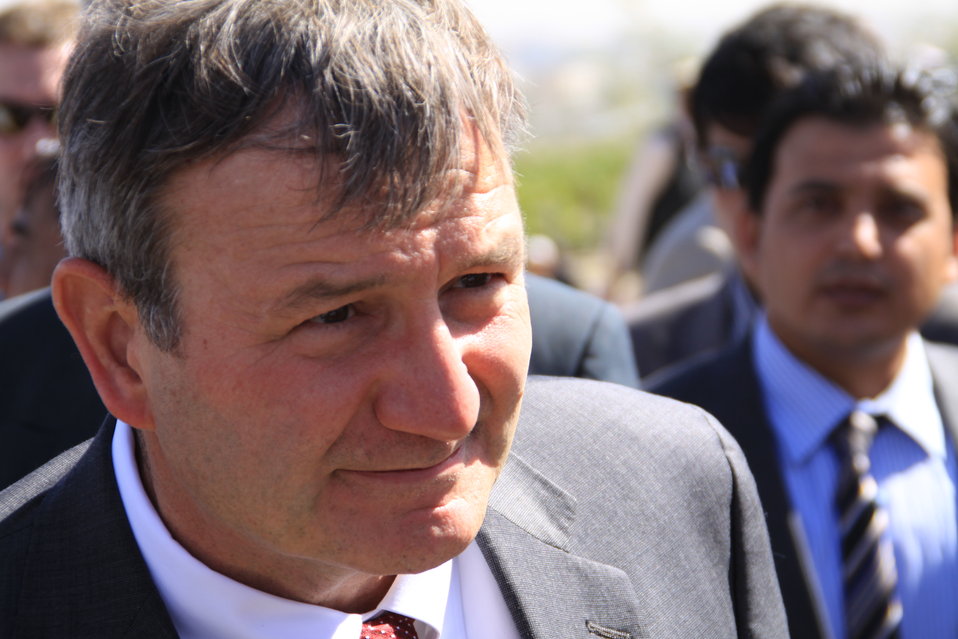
AVIPA Plus Wheat Seed Distribution 101005

US Ambassador Karl Eikenberry and USAID Acting Mission Director Kevin Brownawell joined the Minister of Agriculture, Irrigation and Livestock, H.E. Minister Mohammed Rahimi in signing a Memorandum of Understanding and distributing vouchers to area farmers for wheat and fertilizer.

US Ambassador Karl Eikenberry and USAID Acting Mission Director Kevin Brownawell joined the Minister of Agriculture, Irrigation and Livestock, H.E. Minister Mohammed Rahimi in signing a Memorandum of Understanding and distributing vouchers to area farmers for wheat and fertilizer.

US Ambassador Karl Eikenberry and USAID Acting Mission Director Kevin Brownawell joined the Minister of Agriculture, Irrigation and Livestock, H.E. Minister Mohammed Rahimi in signing a Memorandum of Understanding and distributing vouchers to area farmers for wheat and fertilizer.